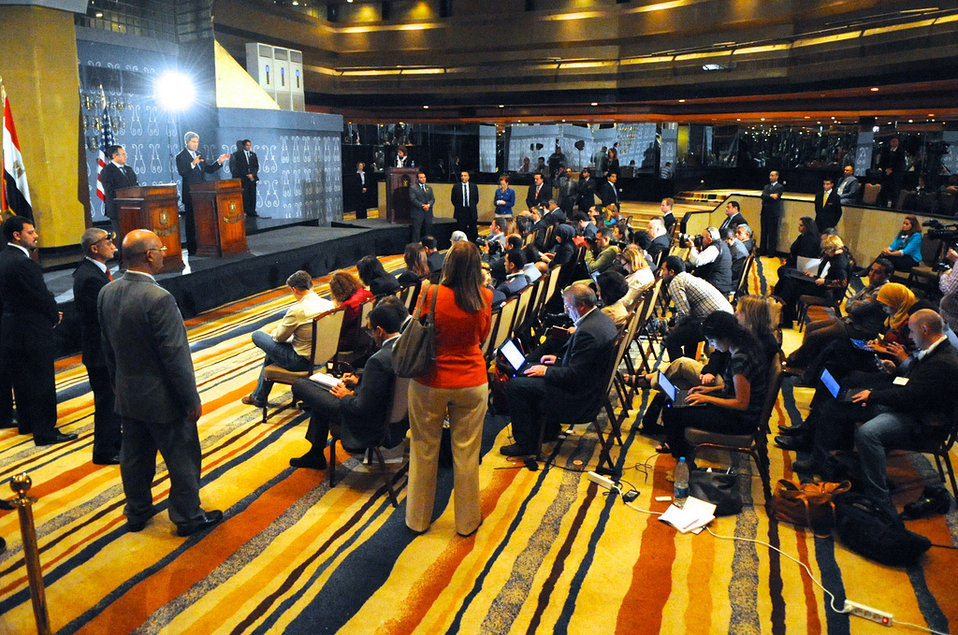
Secretary Kerry, Egyptian Foreign Minister Fahmy Hold News Conference

U.S. Secretary of State John Kerry and Egyptian Foreign Minister Nabil Fahmy speak to reporters during a joint news conference following a meeting in Cairo, Egypt, on November 3, 2013.